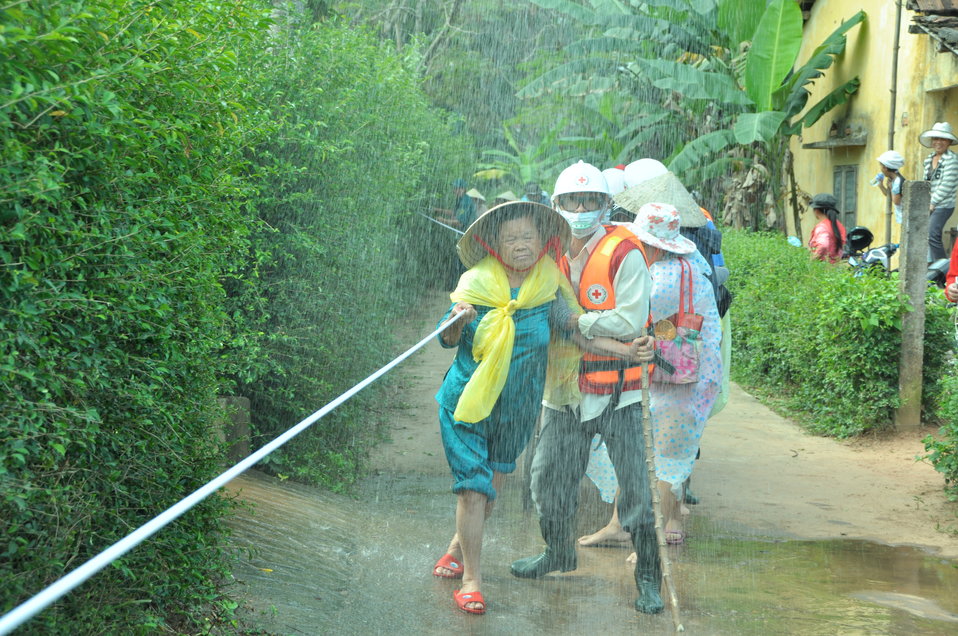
USAID, Red Cross Support Disaster Response Drill in Duy Hoa Commune, Quang Nam Province

Duy Hoa Commune, Quang Nam Province
December 5, 2012